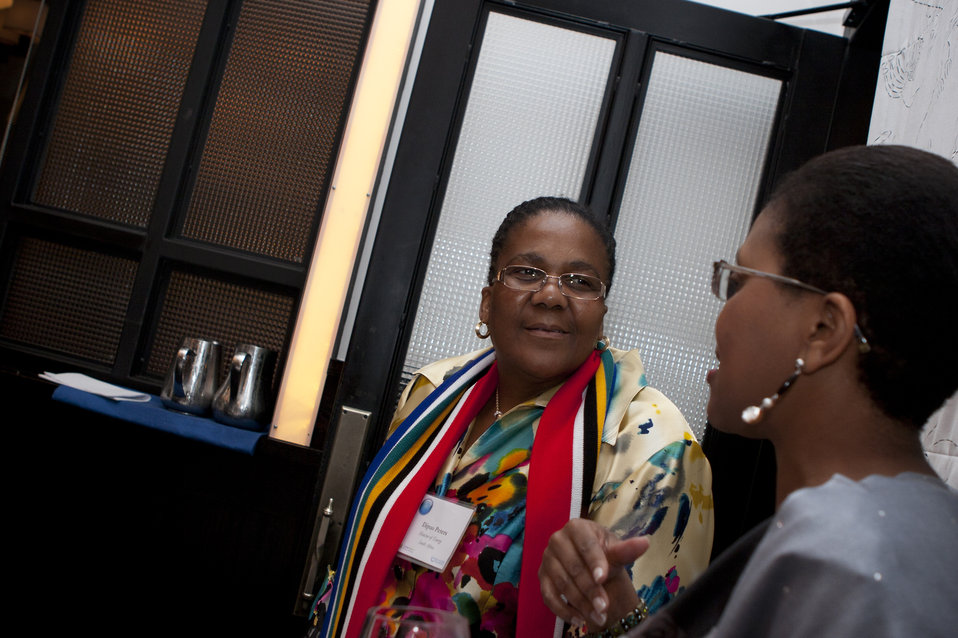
WomenandEnergy 41